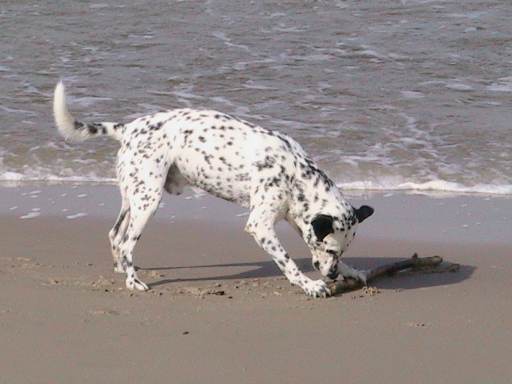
Lietuvių: Veislė: mišrūnas (panašus į Dalmatiną) Gyv.vieta: Palanga Autorius: Knutux